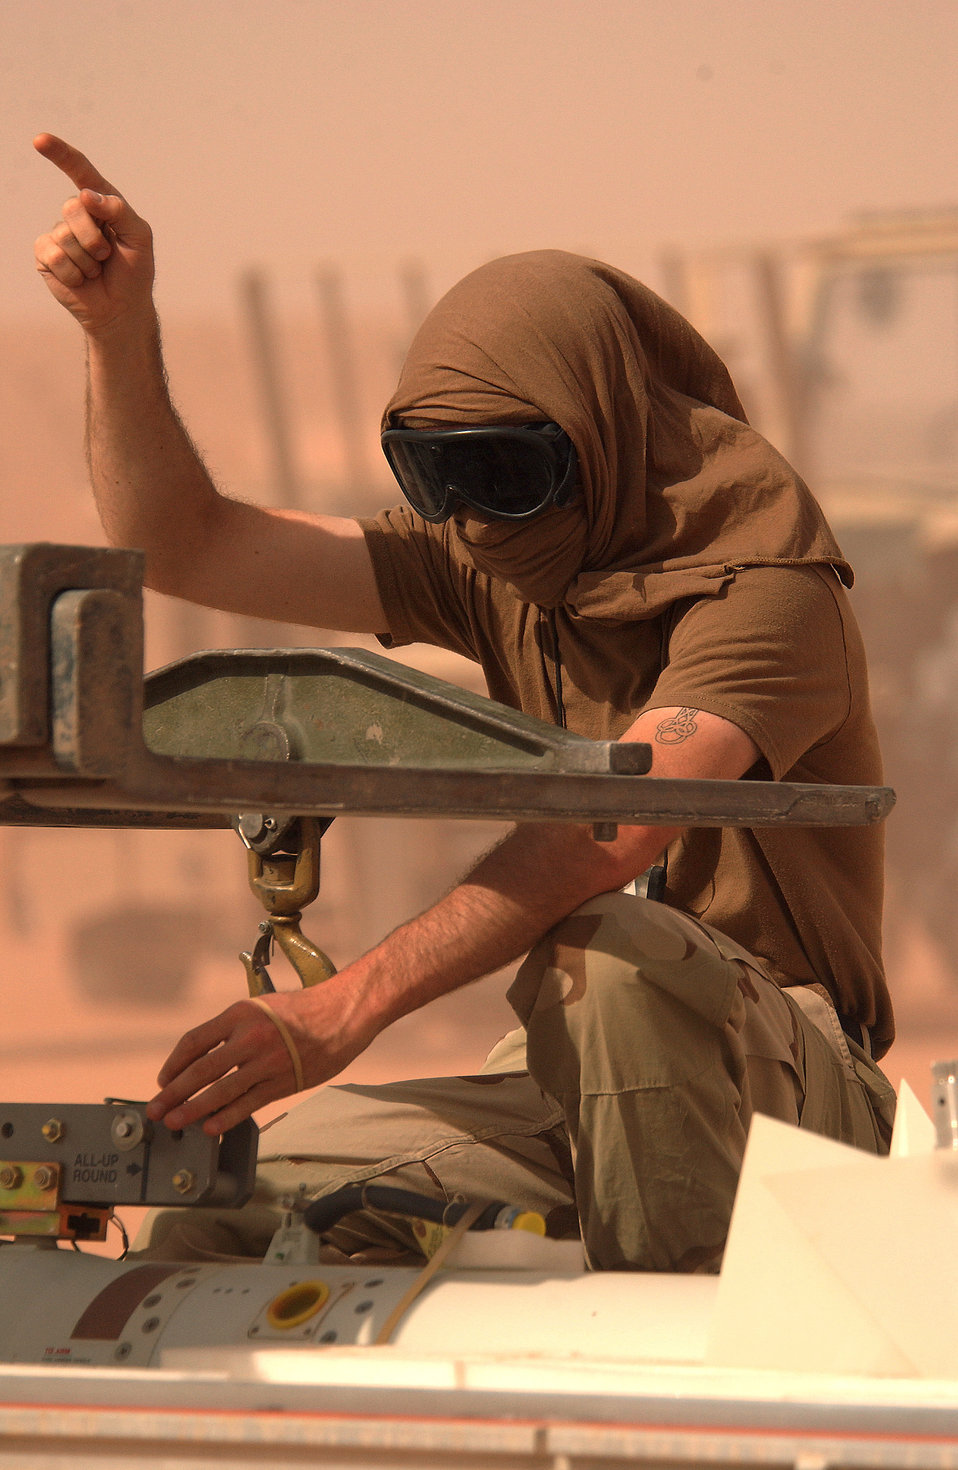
Nipp

OPERATION IRAQI FREEDOM (AFPN) -- Staff Sgt. Jason Nipp protects his eyes during a sand storm while spotting a munitions handling unit carrying missile for an F-16 Fighting Falcon on the flightline at a forward-deployed location March 25. Nipp is a crew chief with the 363rd Expeditionary Equipment Maintenance Squadron. He is deployed from Ramstein Air Base, Germany. Squadron members are working 12-hour days seven days a week.